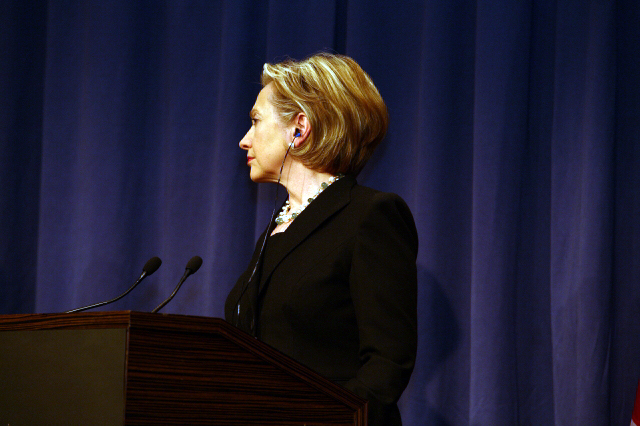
Press Conference With Russian Foreign Minister

Press conference after dinner meeting between U.S. Secretary of State Hillary Rodham Clinton and Russian Foreign Minister Sergey Lavrov in Geneva, Switzerland March 6, 2009.